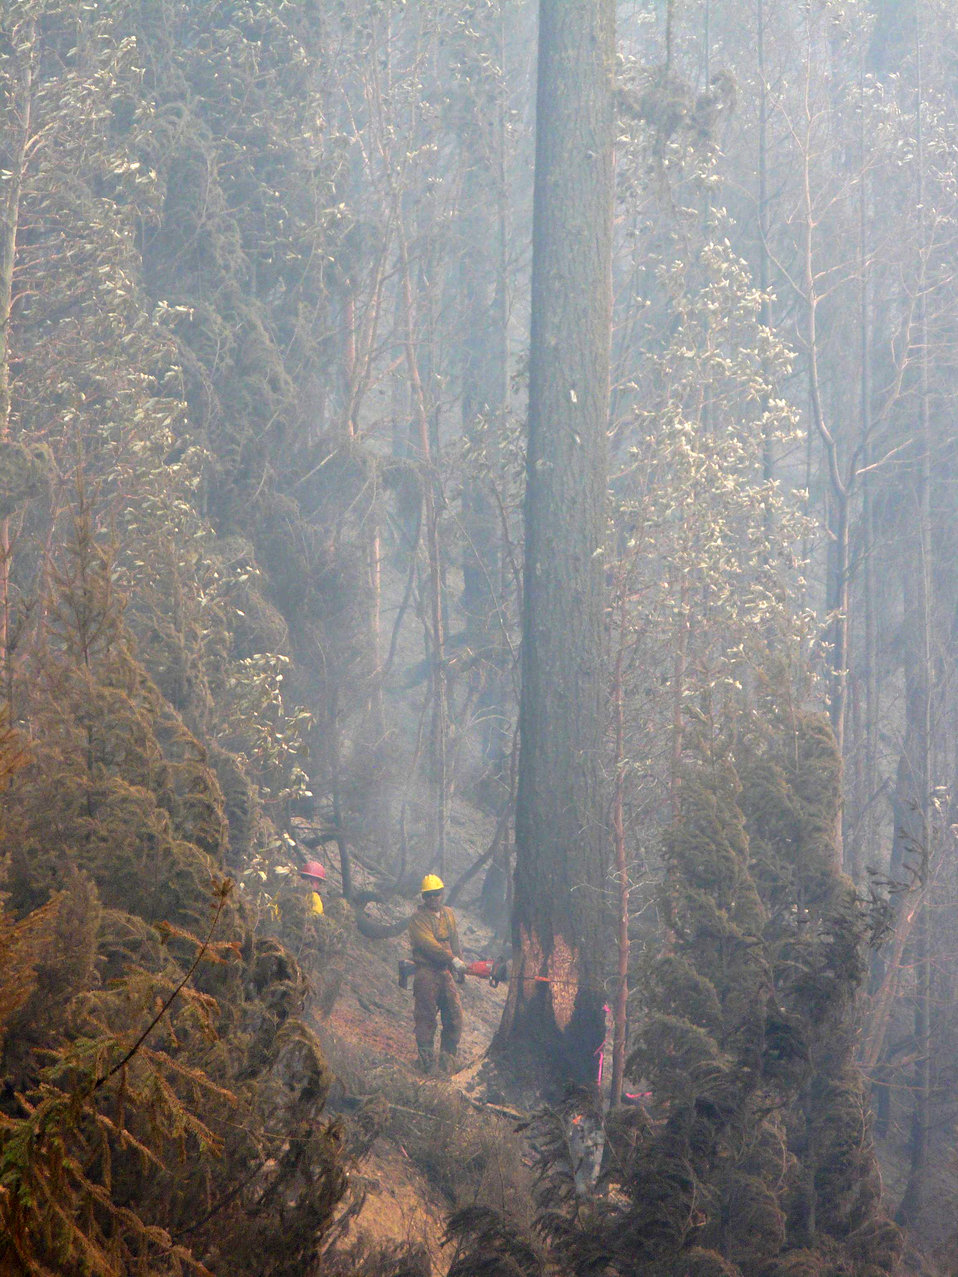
Firefighters fell trees in advance of the Brimstone Fire in Oregon. The Brimstone Fire near Merton, OR began on Jul. 26, 2013 began by lightning consumed 2,372 acres and is 100% contained.